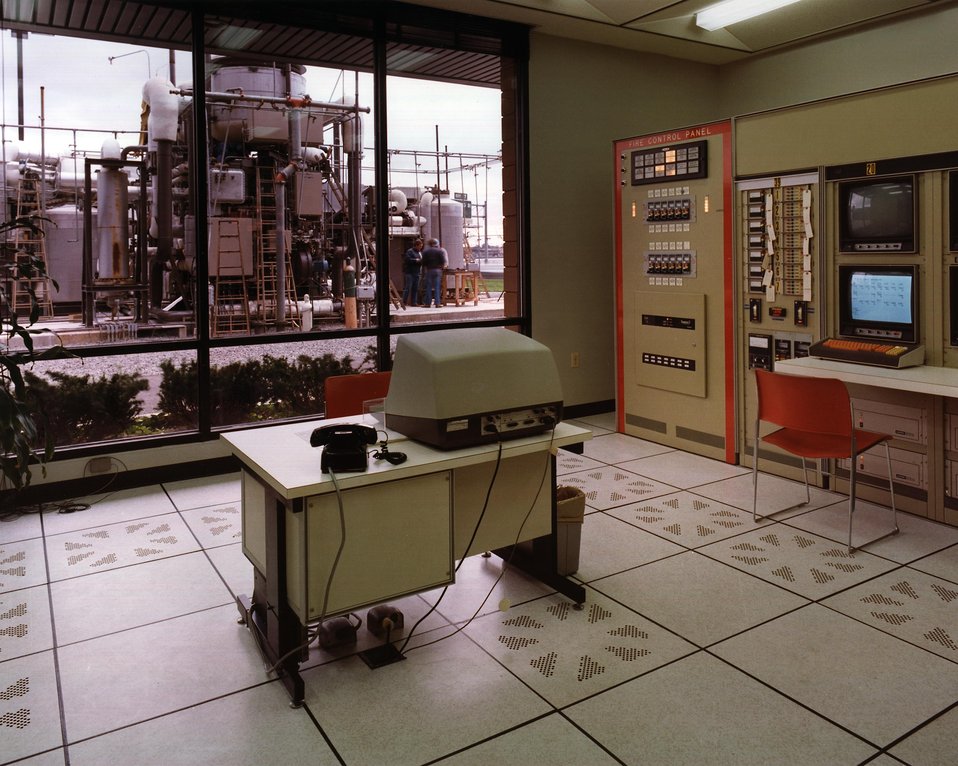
VIEW OF THE POWER PLANT FROM INSIDE THE CONTROL ROOM.

THE 4.8-MW FUEL CELL POWER PLANT CONTAINS A FUEL PROCESSOR FOR ENRICHING HYDROCARBON FUEL WITH HYDROGEN, A FUEL CELL POWER SECTION IN WHICH THE PROCESSED FUEL AND AIR REACT TO GENERATE DC POWER, AND AN INVERTER IN WHICH THE DC IS CHANGED TO AC. THIS TYPE OF POWER PLANT IS ESPECIALLY SUITED TO URBAN AND OTHER DENSELY POPULATED AREAS BECAUSE IT IS A MODULAR SYSTEM WHICH IS EASY TO TRANSPORT BY TRUCK AND ASSEMBLE IN A SMALL AREA. OTHER ADVANTAGES ARE ITS ALMOST NOISELESS OPERATION, LACK OF POLLUTION, AND ABILITY TO OPERATE WITHOUT LARGE QUANTITIES OF WATER. THE 4.8-MW FUEL CELL POWER PLANT IS BEING INSTALLED IN NEW YORK CITY AND WILL EVENTUALLY BE INTEGRATED INTO THE CONSOLIDATED EDISON UTILITY NETWORK.